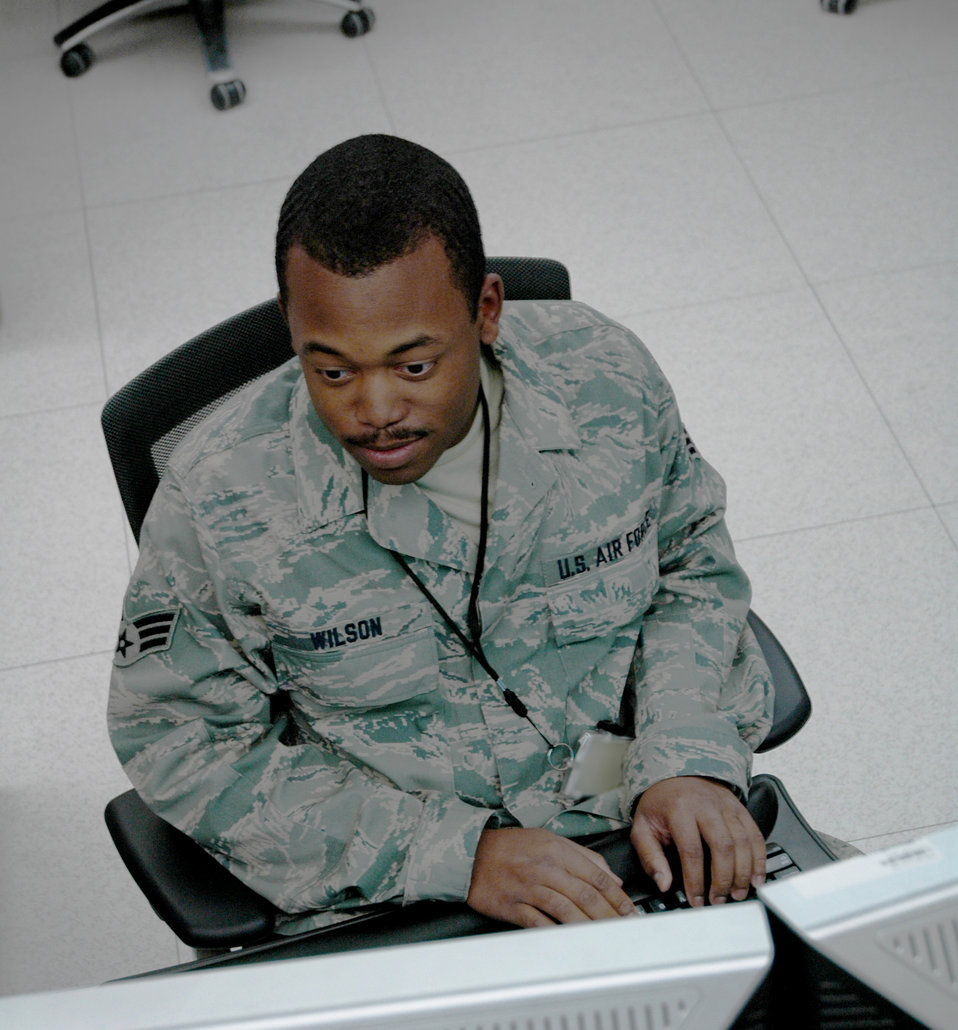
Combat coders build Web pages for warfighters

Senior Airman Armani Wilson writes computer code April 16, 2010, in the Combined Air and Space Operations Center. Airman Wilson is a combat coder software engineer.